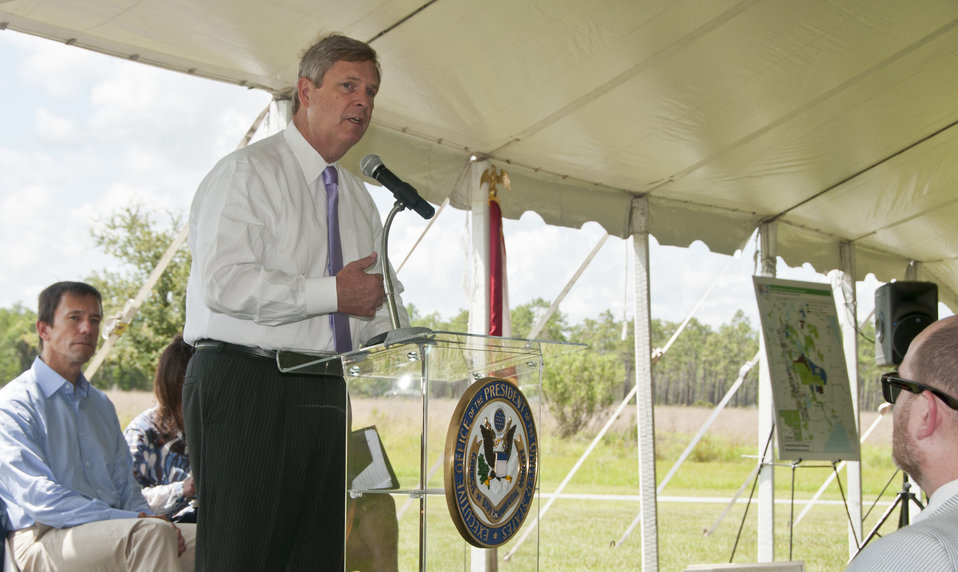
U.S. Department of Agriculture Secretary Tom Vilsack discussed Everglades restoration and announced significant Wetlands Reserve Program (WRP) funding for projects in the Northern Everglades at an America's Great Outdoors event on Friday, July 13, 2012 in Kissimmee, FL.